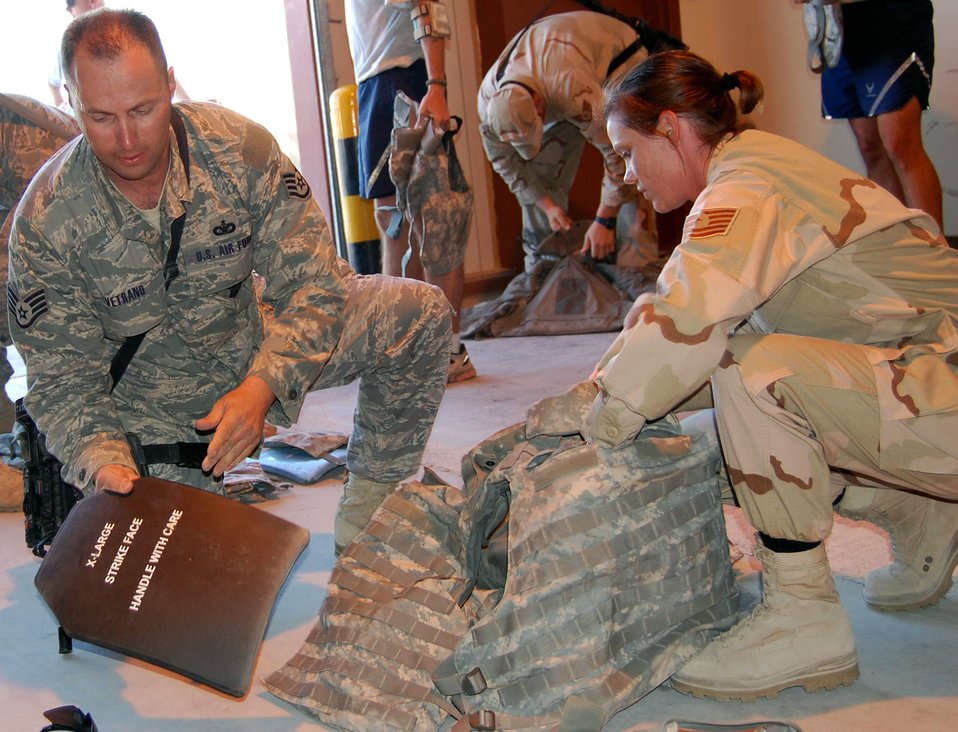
Airmen prepare servicemembers to fight

Tech. Sgt. Eugenia Robinson helps Staff Sgt. Glen Vetrano remove interceptor plates from individual body armor Nov. 7 at the expeditionary theater distribution center in Southwest Asia. Sergeant Robinson, a 386th Expeditionary Logistics Readiness Squadron contingency supply technician, is on a one-year rotation here while Sergeant Vetrano, an 887th Expeditionary Security Forces Squadron patrolman, is from Moody Air Force Base, Ga.